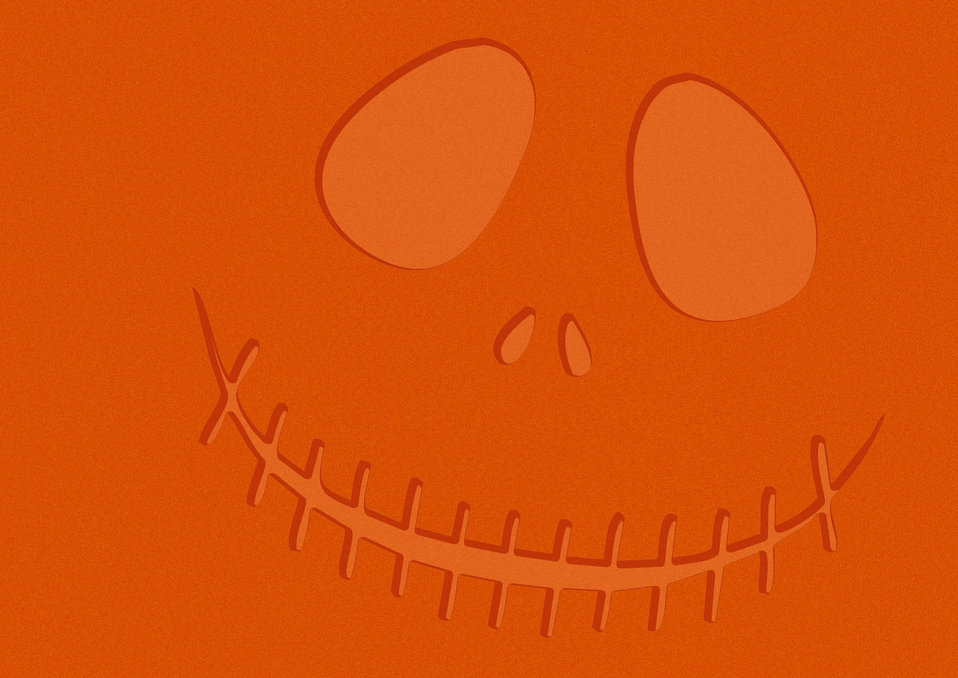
Orange halloween face illustration.